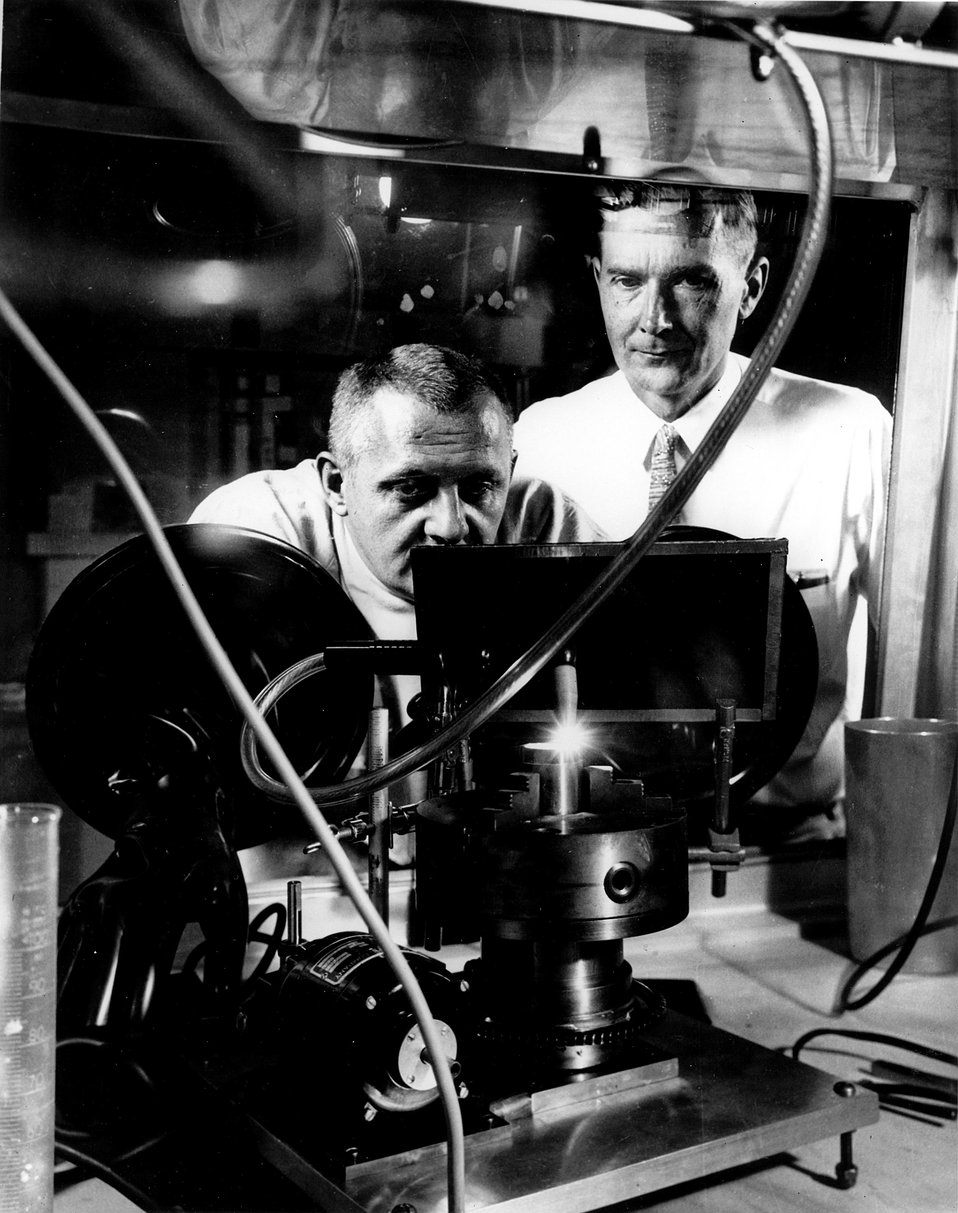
An end plug is welded to an irradiation capsule inside of a nitrogen filled glove box at Argonne.
c.1968